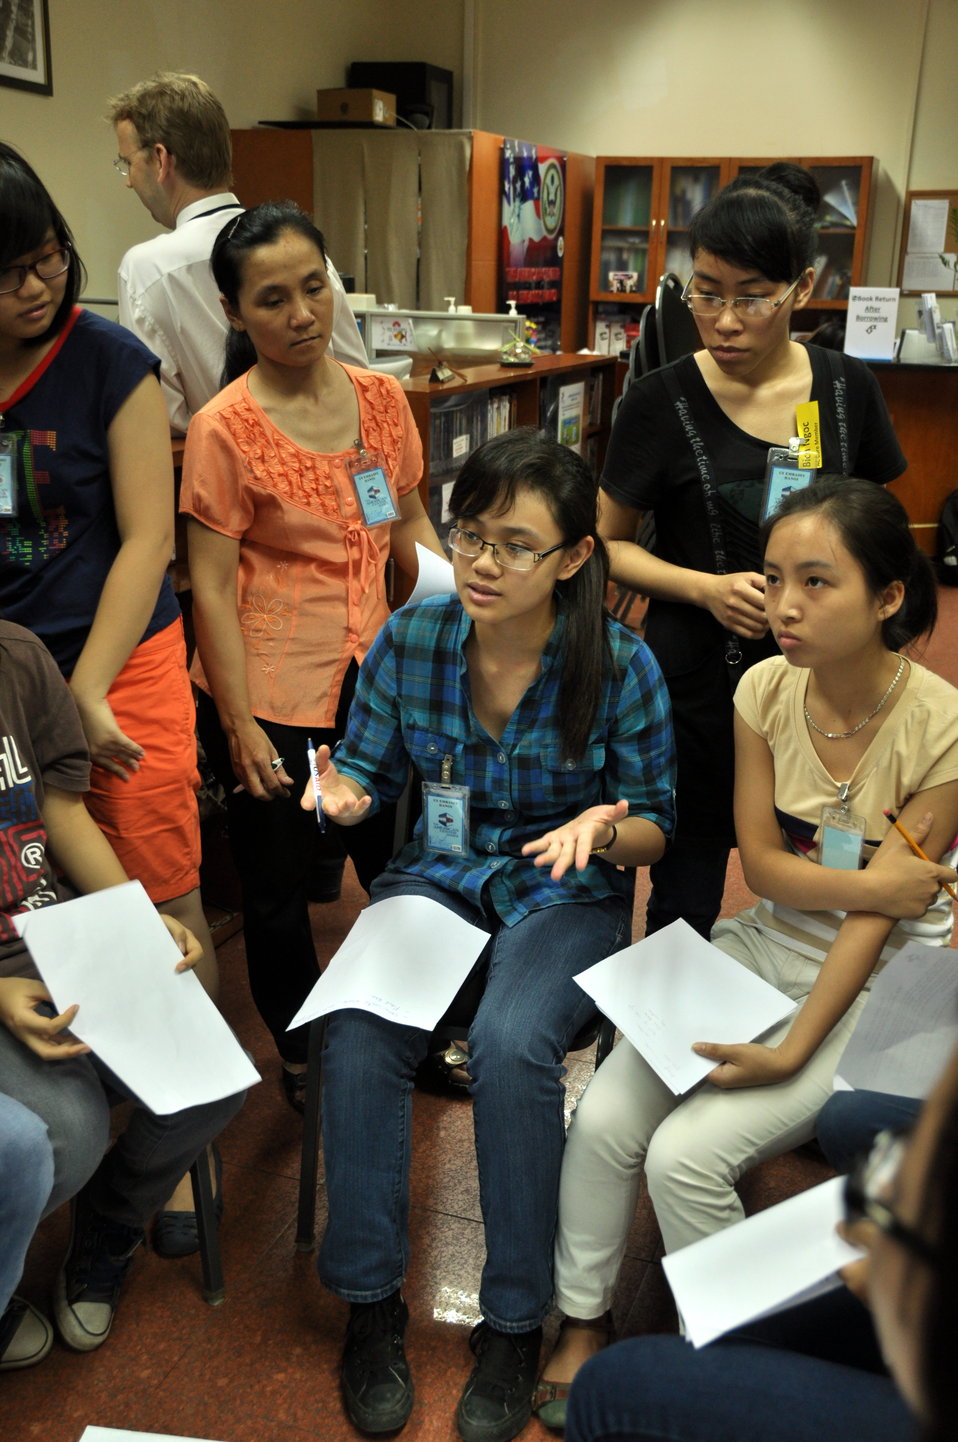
Climate Change Talk at the American Center

Hanoi, May 28, 2013.